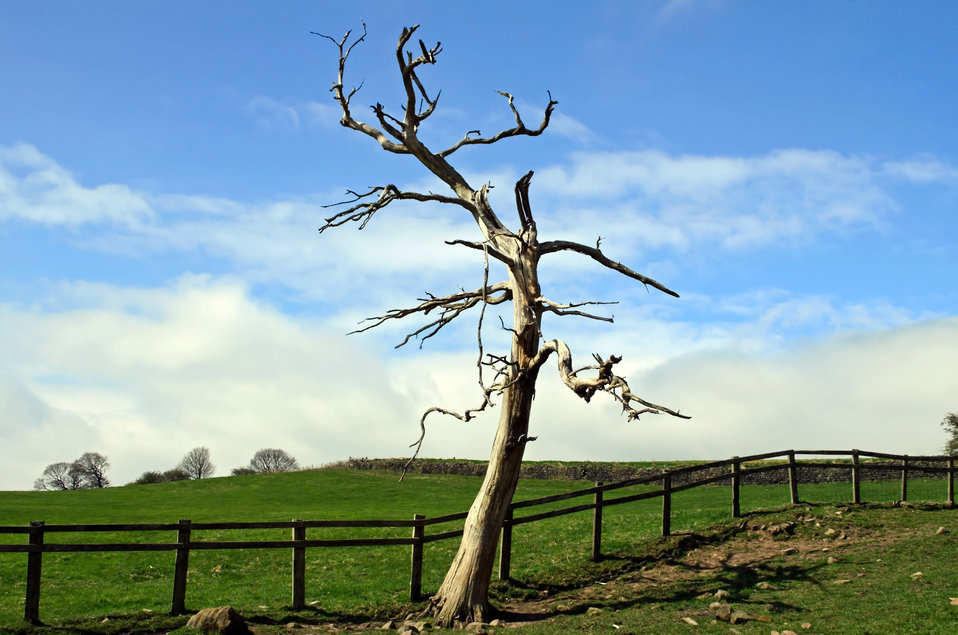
Tree and blue sky.